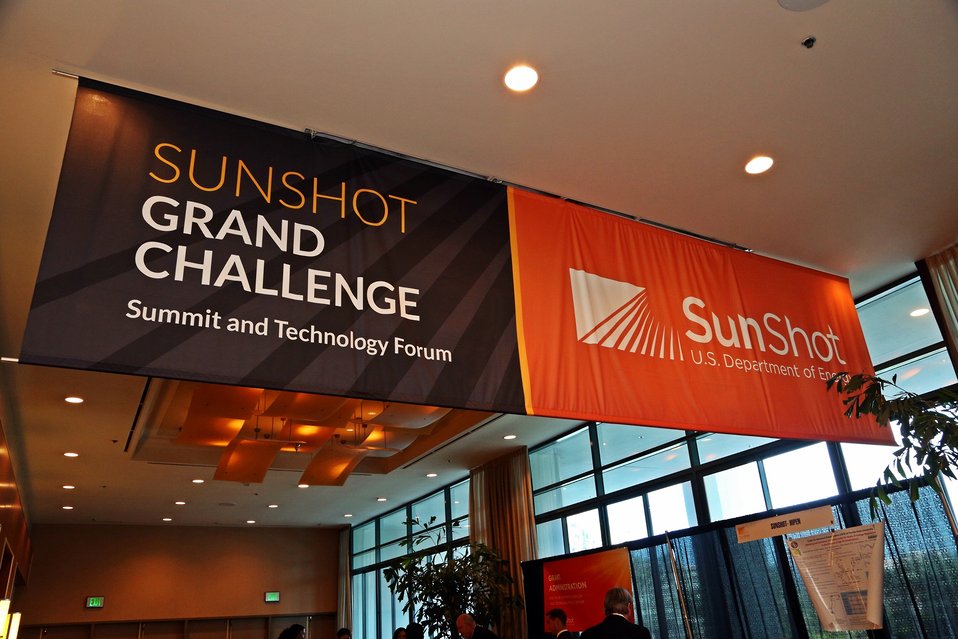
Tech Forum 23

Entrance to the Tech Forum.